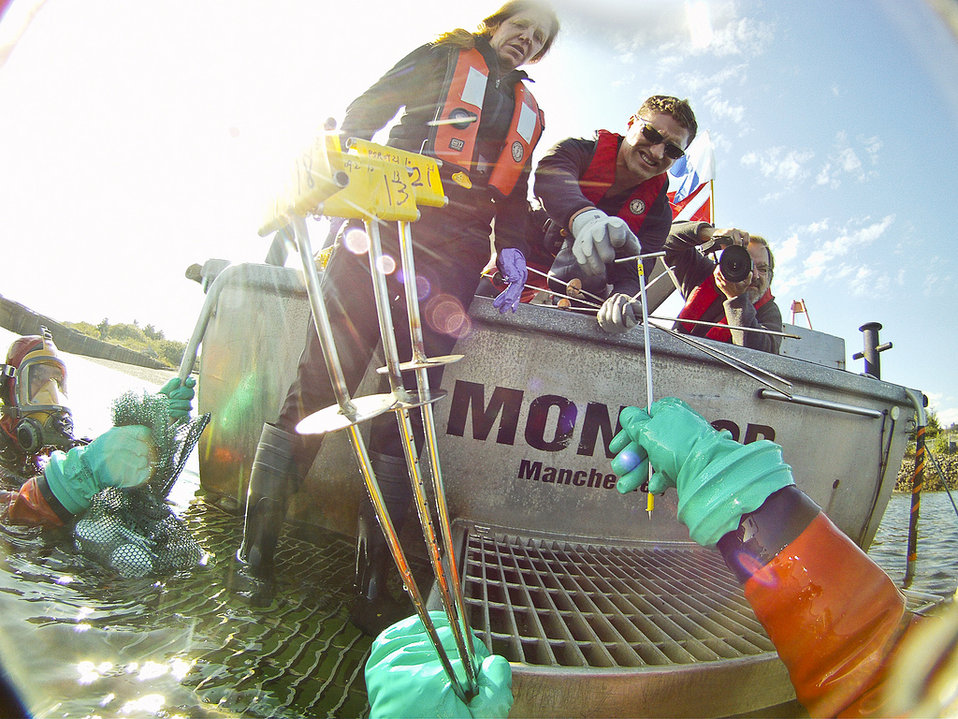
Handing off the samples at the Pacific Sound Resources cleanup site

Dive tenders Lisa Macchio and Tim Siwiec from EPA take solid phase microextraction devices from diver Brent Richmond, EPA. What are those and why?

EPA divers often are required to dive at Superfund sites to determine if the cleanup is working. At the Pacific Sound Resources site, EPA divers placed and retrieved these devices which absorb site contaminants over a period of time. Later, these rods are sectioned at the lab to determine whether or not bottom, or benthic, life would be exposed and verify that the protective cap is still functioning. The EPA Region 10 dive boat 'Monitor' is visible in the background.